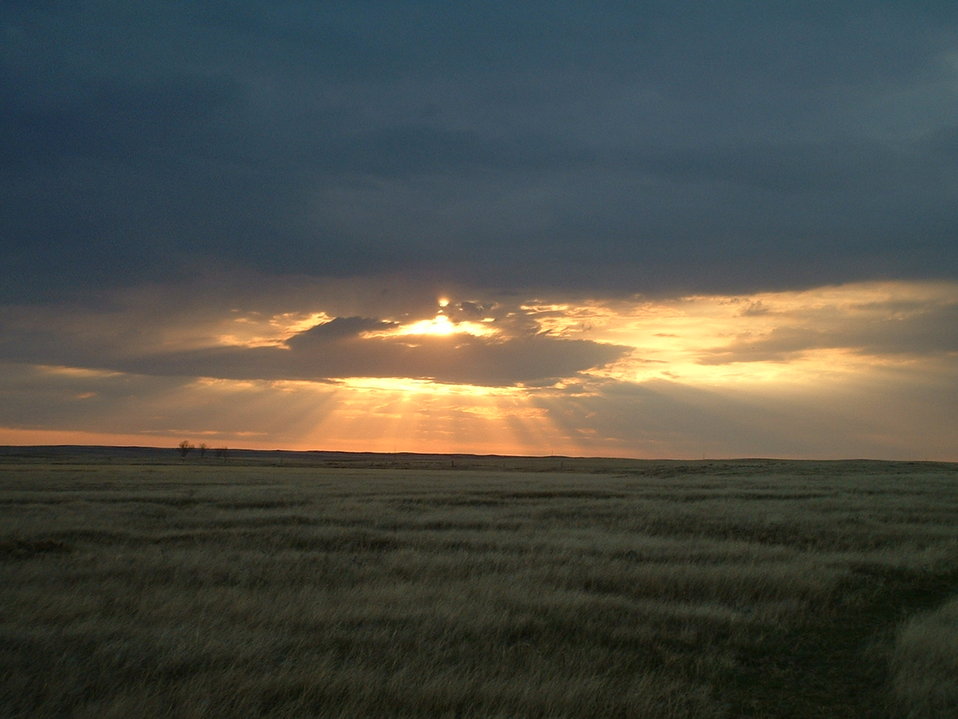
Sunrise on Bowdoin NWR